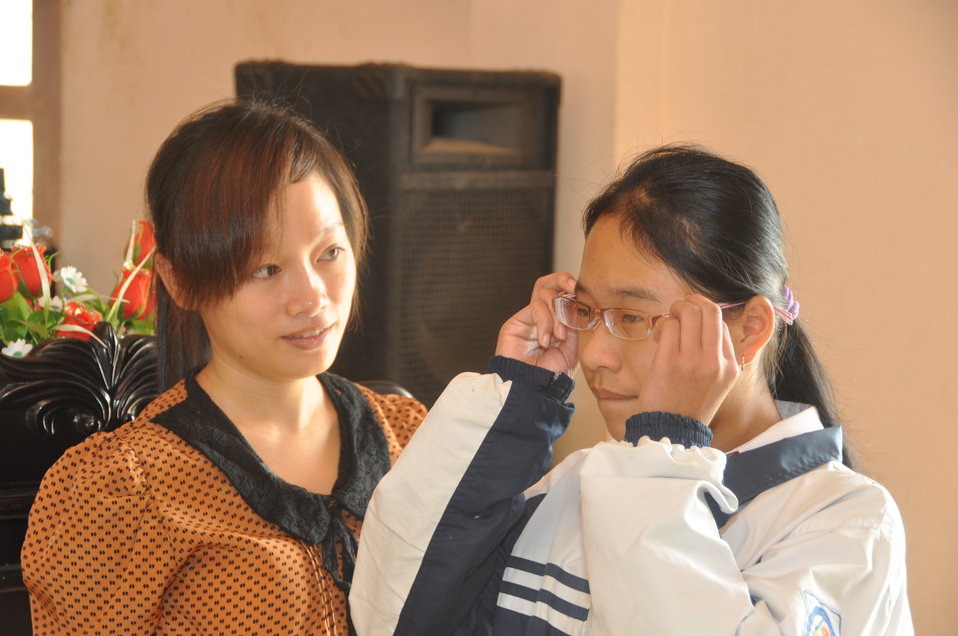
School children in Dak To, Kon Tum Province, receive eyeglasses under a program supported by USAID and partners HKI and World Learning